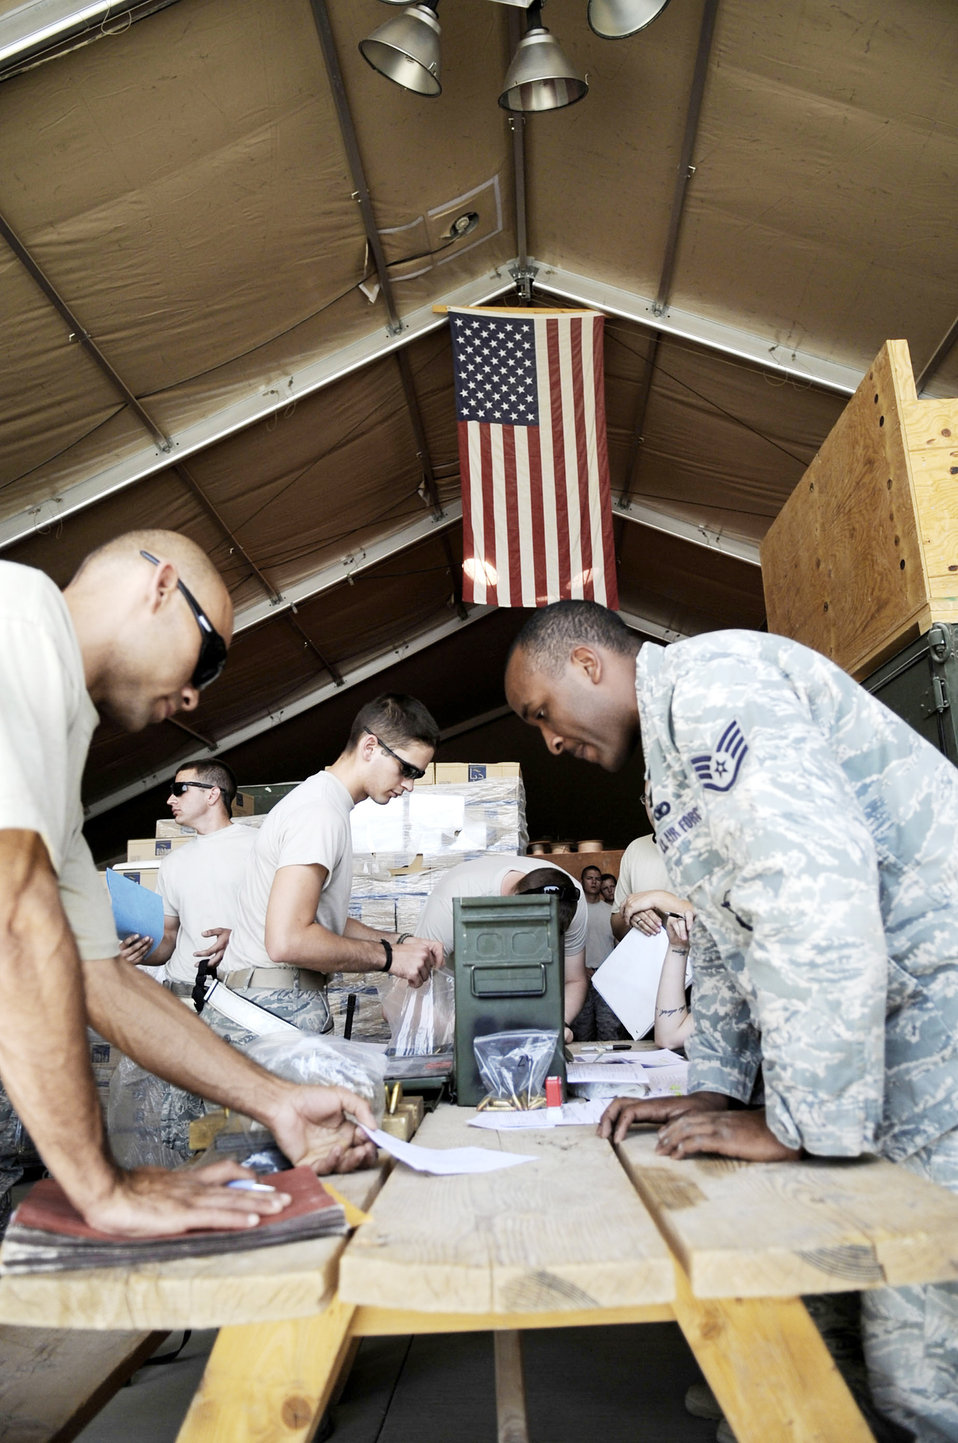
Combat arms teams support all operations

Staff Sgt. Chanson Johnson reviews a hand receipt to ensure redeploying members of the 451st Expeditionary Aircraft Maintenance Squadron have properly listed all items being turned in April 16, 2010, at Kandahar Airfield, Afghanistan. Sergeant Johnson is the 451st Expeditionary Security Forces Squadron combat arms NCO in charge.